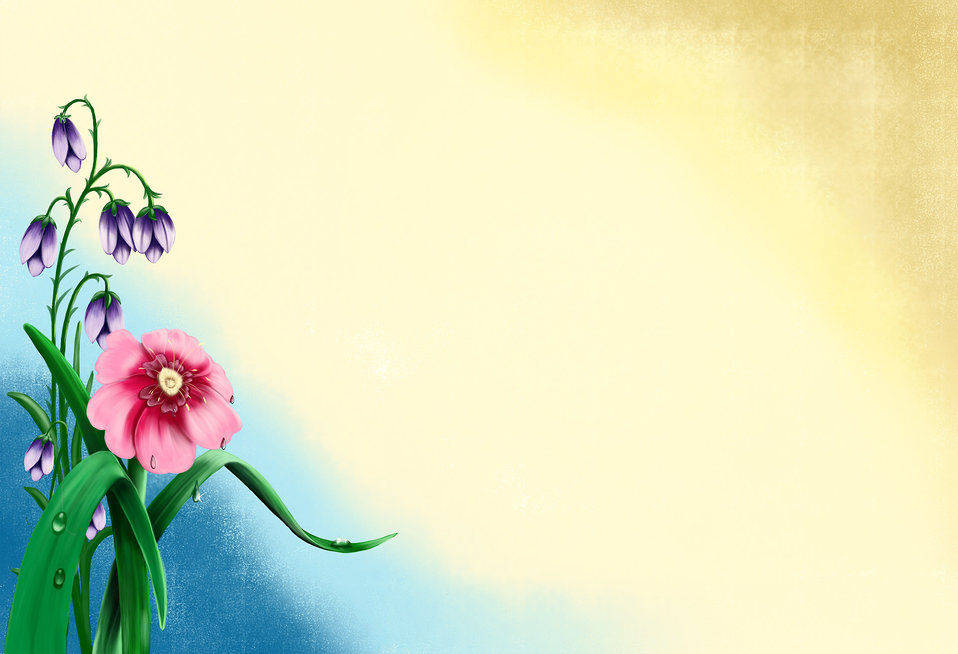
Background labeling

Background ready to write text, cards, invitations. drawing of a flower..